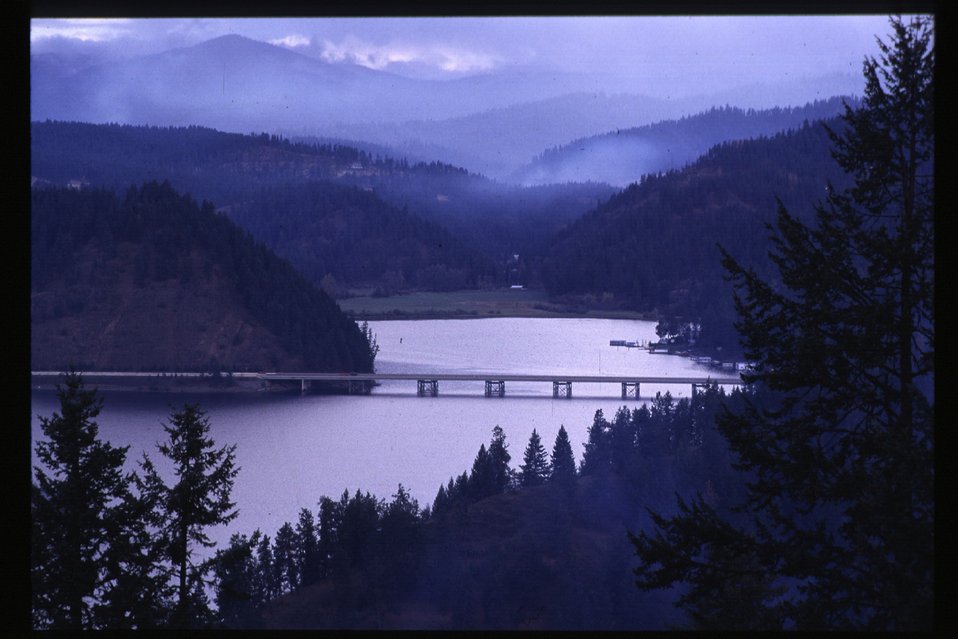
Scenic View from Beauty Bay Couer d'Alene Field Office UCSC Upper Columbia Salmon Clearwater District